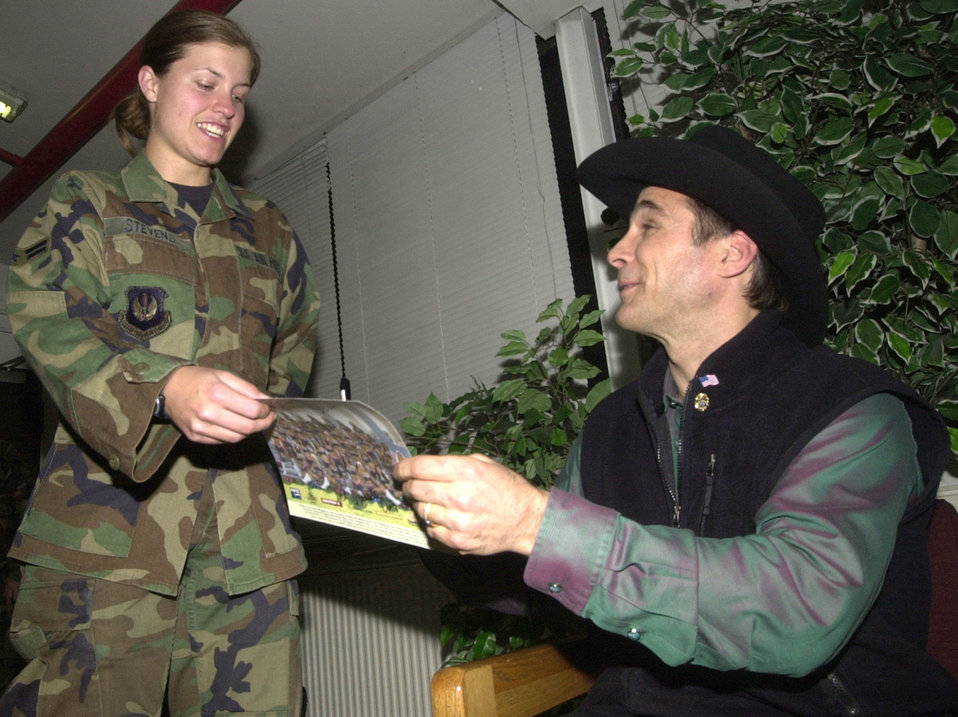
May I have your autograph?

RAMSTEIN AIR BASE, Germany -- Airman 1st Class Charrish Steven, from the 86th Maintenance Squadron, meets Country music singer Clint Black backstage at the Citizen Patriot Tourt here, Oct. 22.